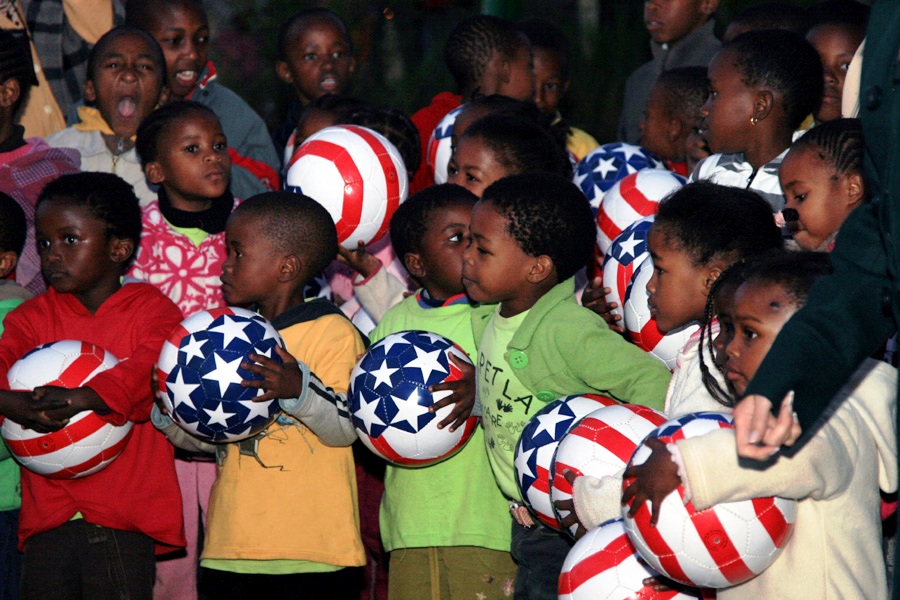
South African Children Wait to Meet Dr. Jill Biden

South African children from the Mapetla Day Care Centre in Soweto, Johannesburg, South Africa, prepare to meet Dr. Jill Biden, wife of Vice President Joseph Biden, on June 10, 2010.